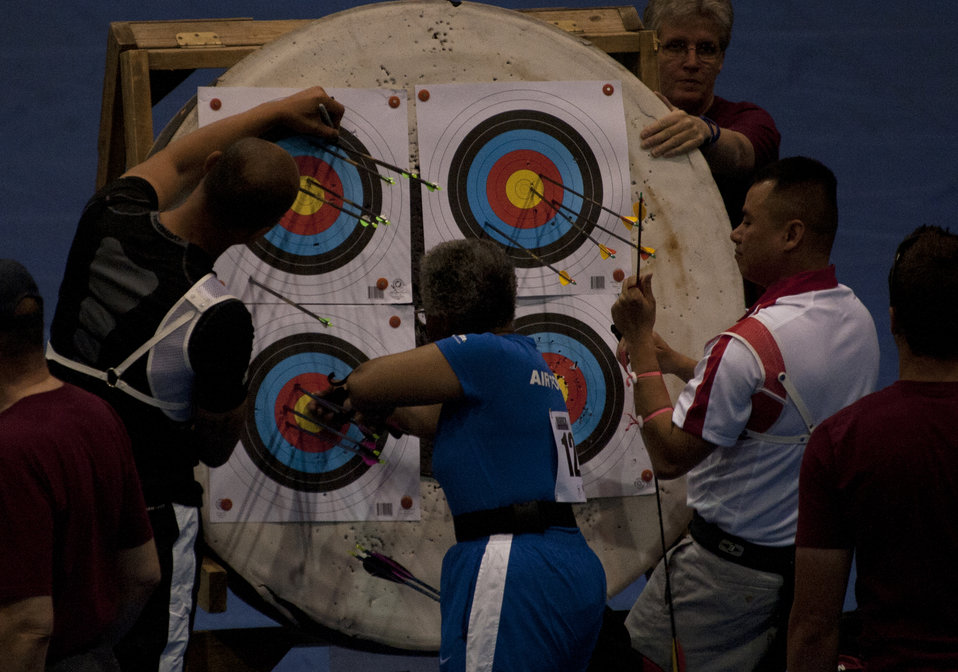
Warrior Games

Gwen Sheppard (center) removes the arrows from her target during the archery competition of the 2012 Warrior Games at the U.S. Air Force Academy in Colorado Springs, Colo., May 2, 2012. Sheppard is with the Air Force team.